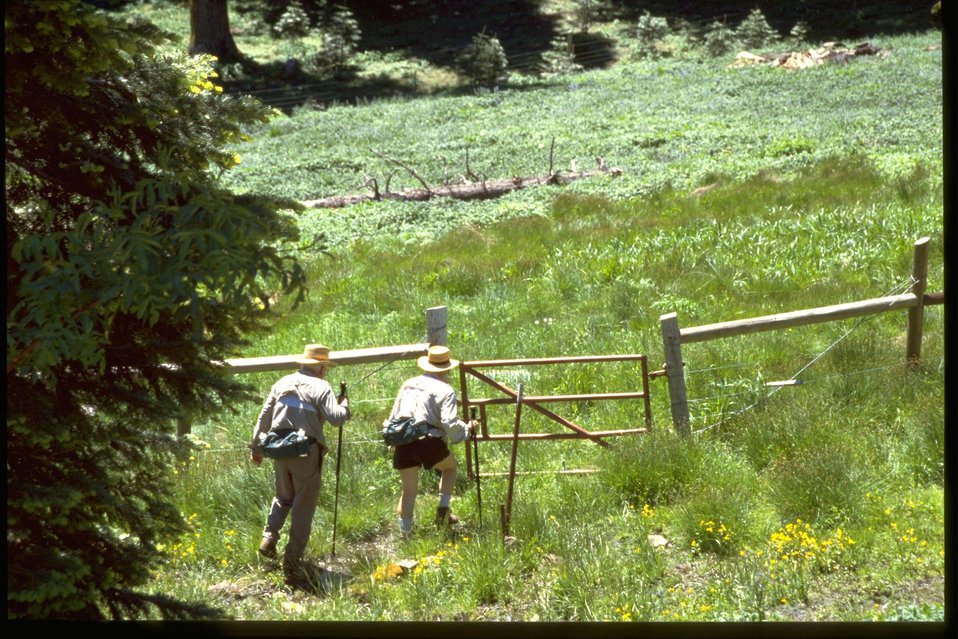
Hikers on the Pacific Crest Trail.